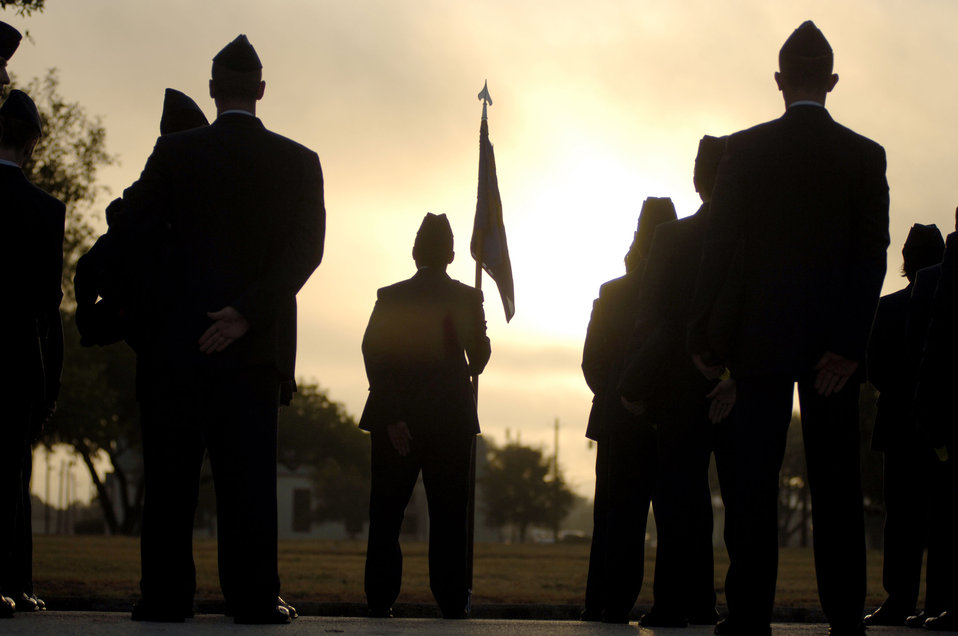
Basic trainees early in the morning

Basic trainees line up for an early-morning formation at Lackland Air Force Base, Texas. Airmen spend six weeks here transforming from a civilian to an Airman.